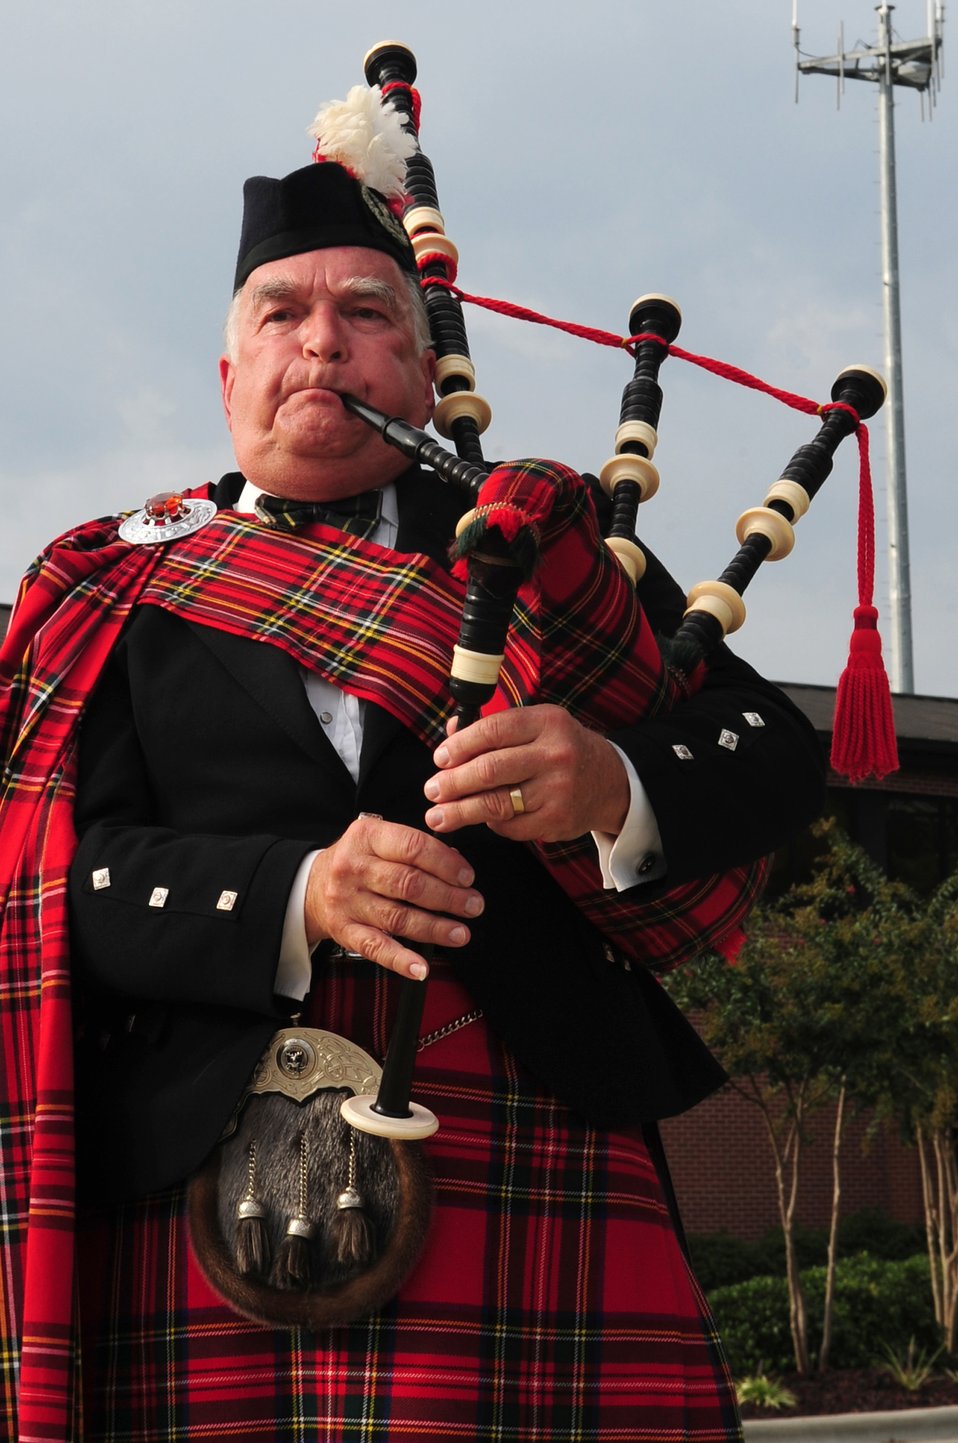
Air Combat Command honors POW/MIA Remembrance Day

Retired Lt. Col. Norm Taflinger, performs Amazing Grace on the bagpipes during the folding of the American flag in a Prisoner of War/Missing in Action remembrance ceremony at Seymour Johnson Air Force Base, N.C., Sept. 18, 2009. The bagpipe adaptation of Amazing Grace did not become a part of U.S. military ceremonies until the 1960s. It is often associated with funerals and a remembrance of those killed in war.